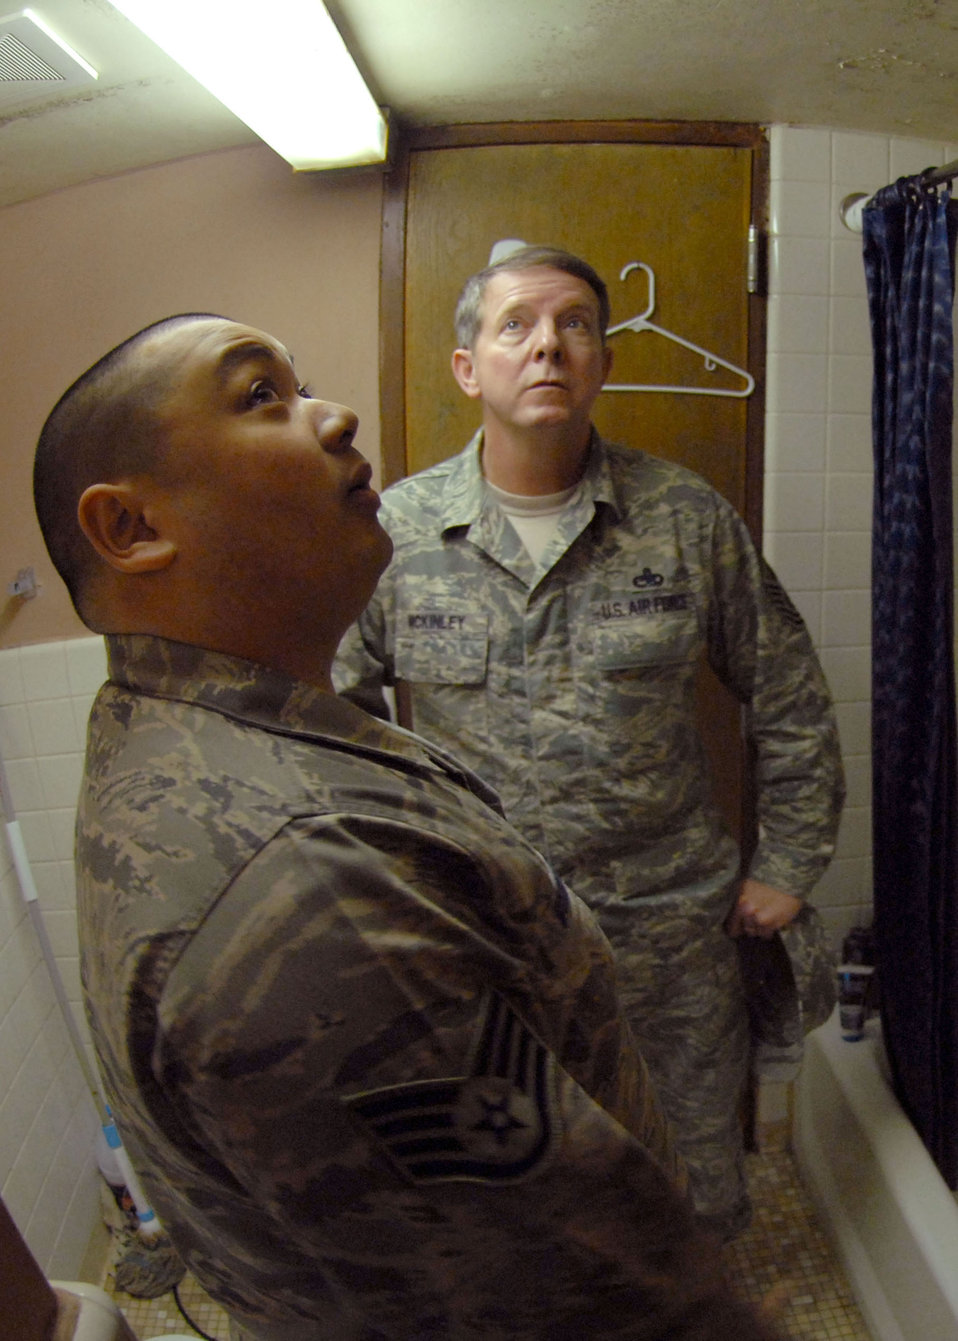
Chief master sergeant of the Air Force visits Kunsan Airmen

Staff Sgt. Jamin McCremens shows Chief Master Sgt. the of Air Force Rodney J. McKinley dorm conditions during the chief's March 24 visit to Kunsan Air Base, South Korea. Sergeant McCremens is an 8th Civil Engineer Squadron dorm manager.